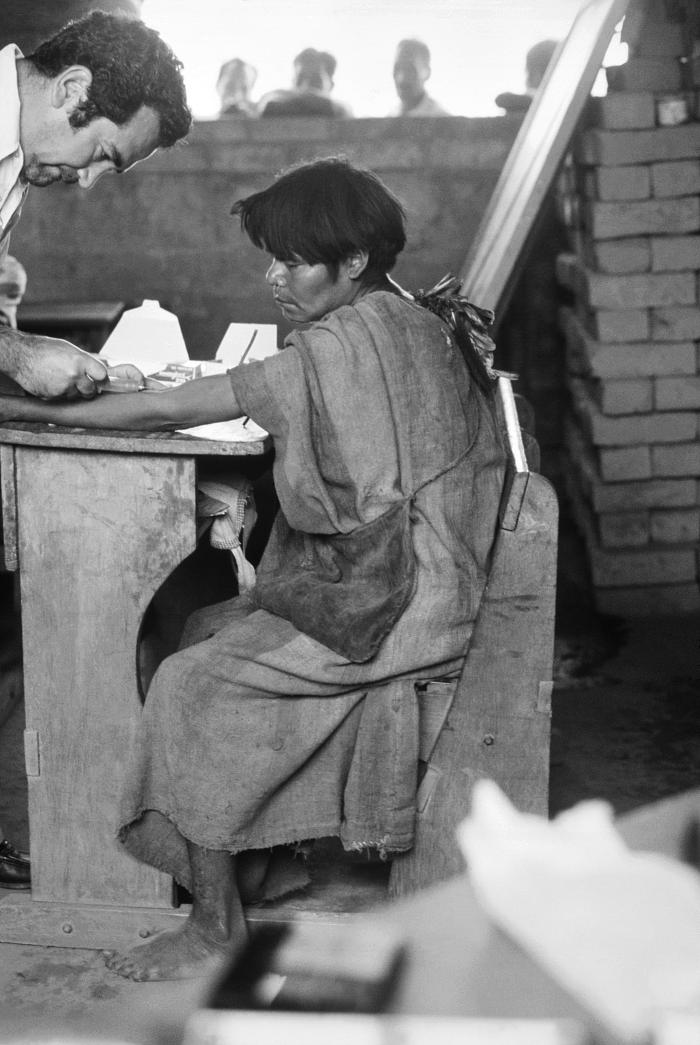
This 1976 image depicts an unidentified public health field technician in the process of obtaining a blood sample from a Peruvian patient in the region of the Amazonian headwaters. See PHIL 5702, for a color version of this image.